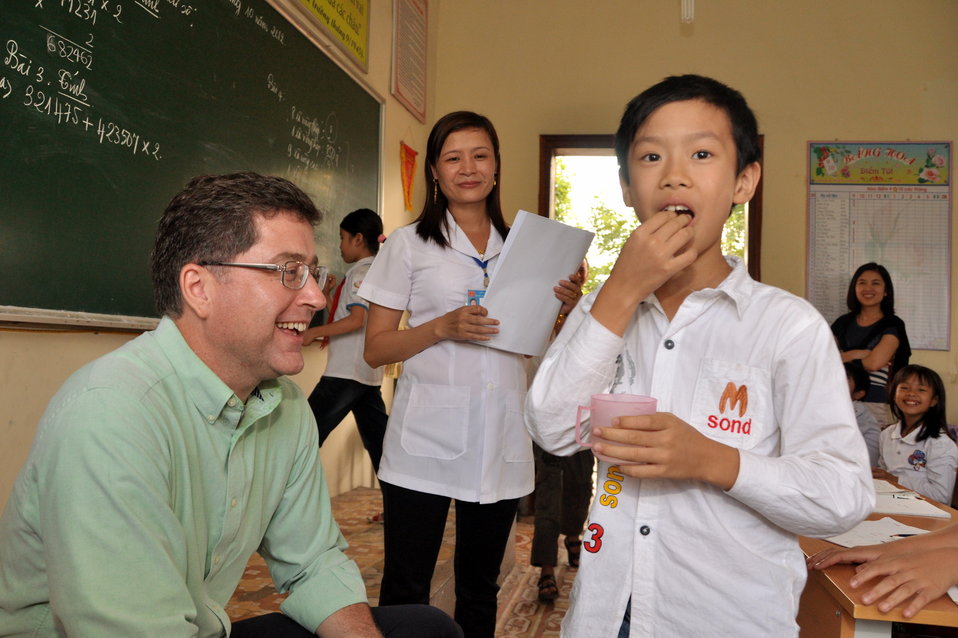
School children receive a dose of deworming medicine in Dien Bien

October 31, 2012